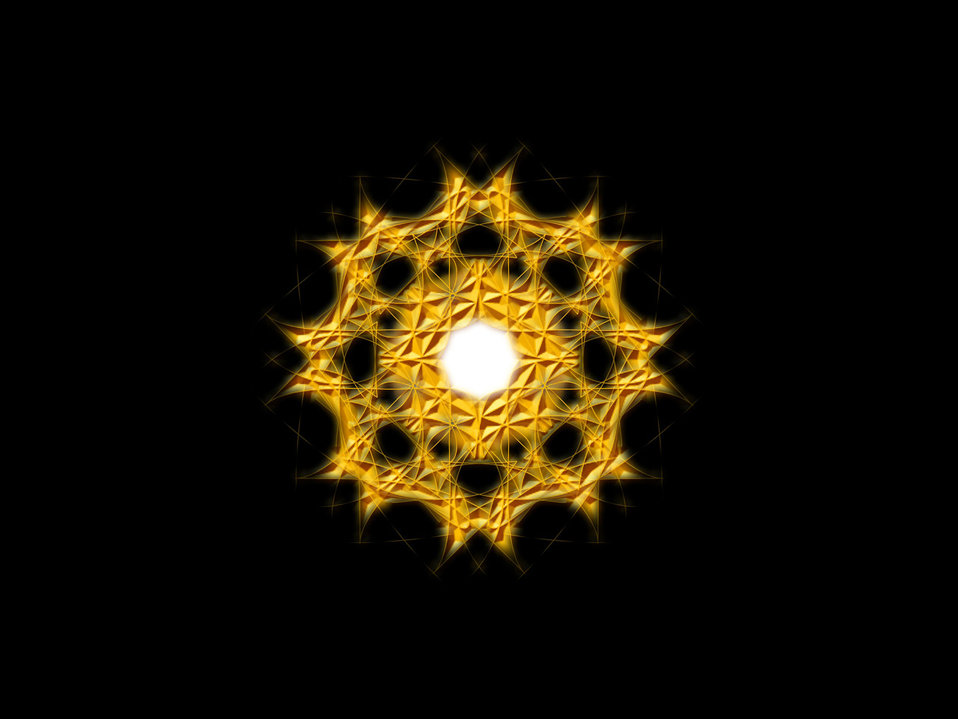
Light spun abstract

Golden light spun abstract graphic crystal mandala.